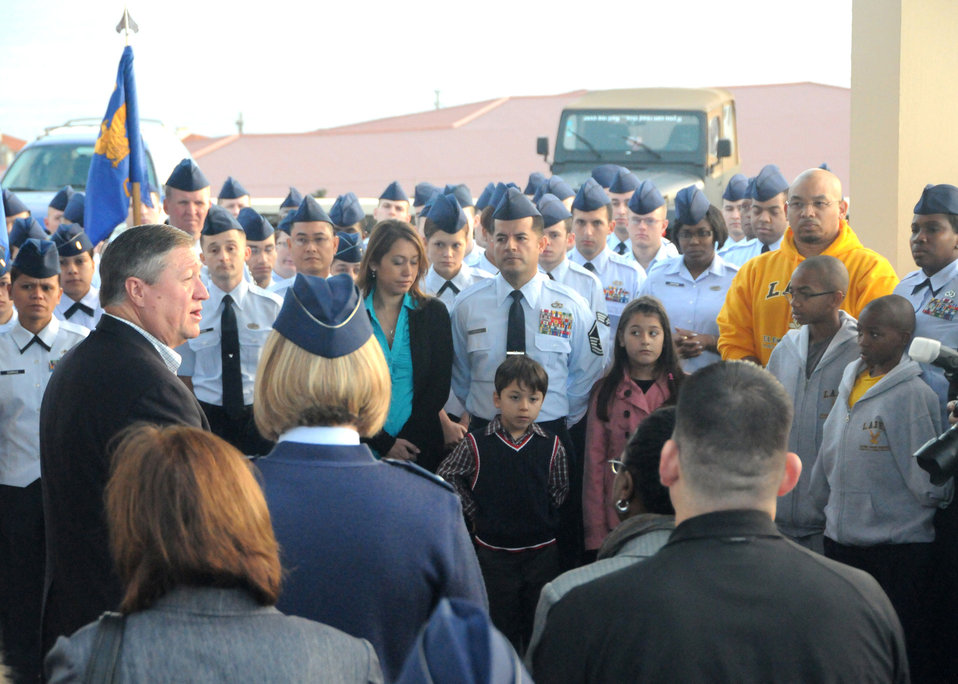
Secretary of the Air Force visits Lajes

Secretary of the Air Force Michael Donley speaks to Team Lajes Airmen during a Warrior Welcome and Departure ceremony at Lajes Field, Azores, Dec. 19, 2011. The Secretary toured several units of the 65th Air Base Wing and spoke with Airmen in all functions and dimensions of the mission at Lajes Field.